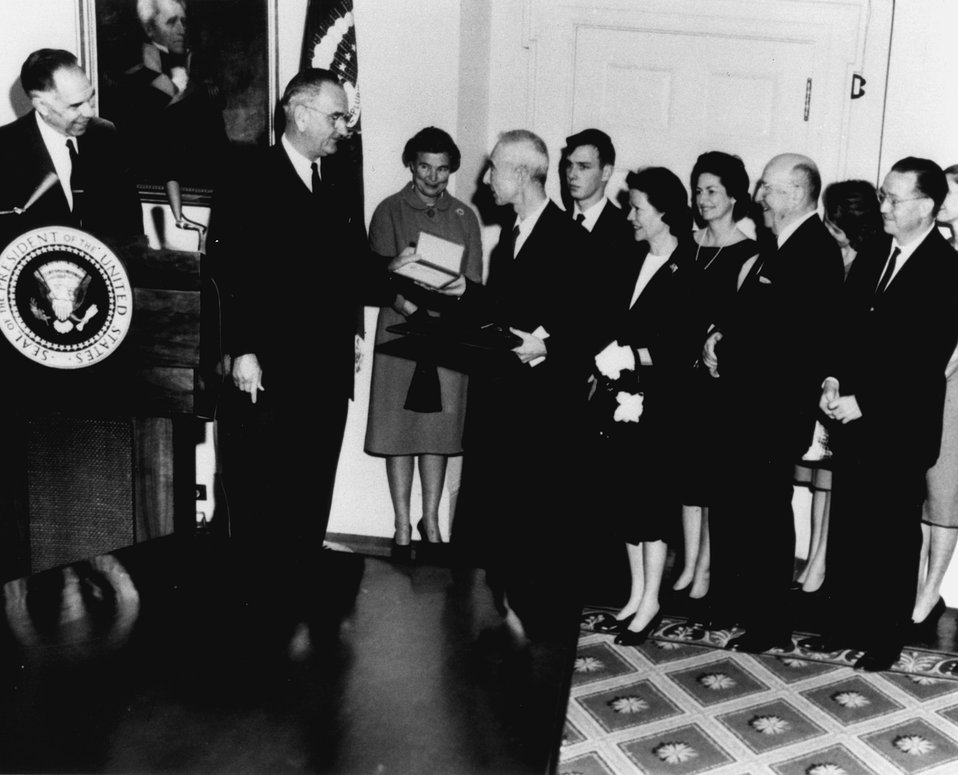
J. Robert Oppenheimer recieves the 1963 Enrico Fermi Award from President Lyndon B. Johnson at a White House ceremony on December 2, 1963.